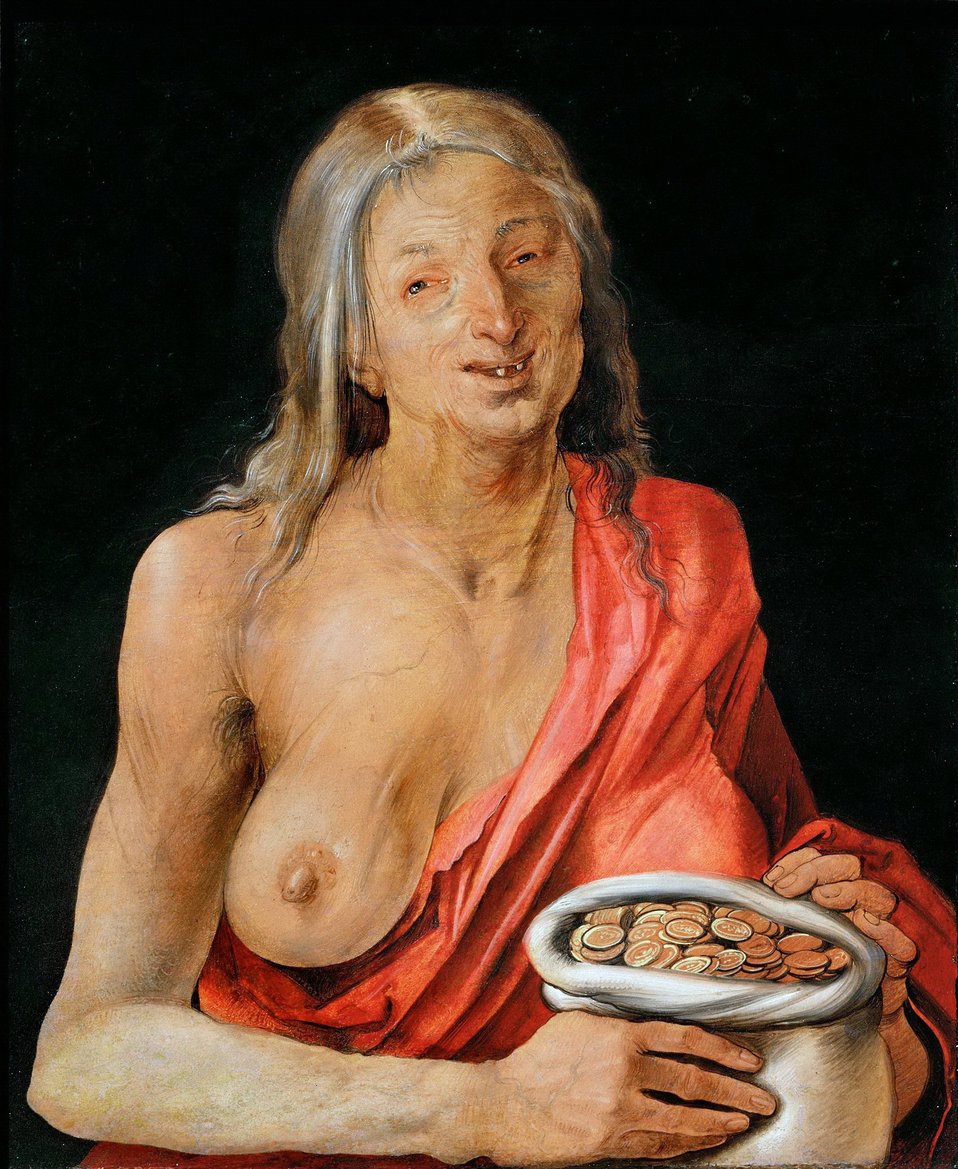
Albrecht Dürer 004b